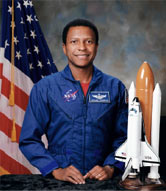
Lt. Col. Michael P. Anderson

1990s -- Lt. Col. Michael P. Anderson